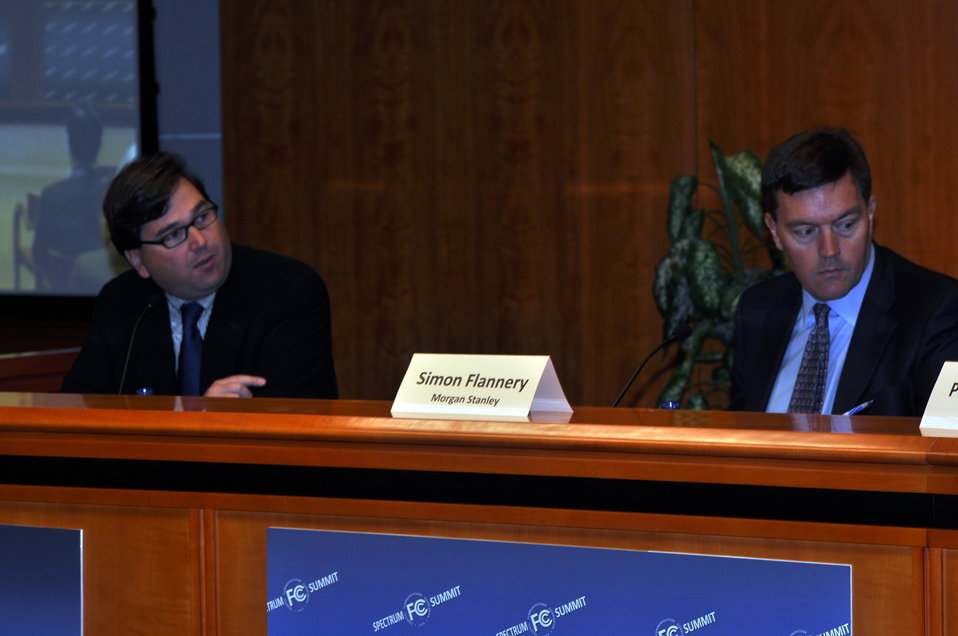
Spectrum Summit